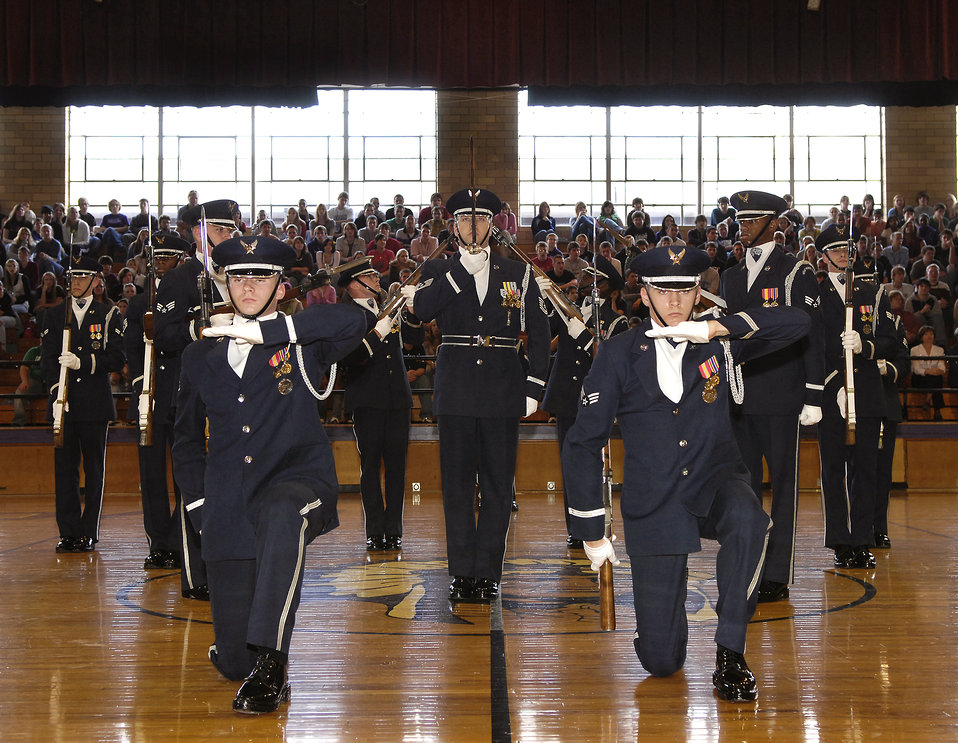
Drills for students

The U.S. Air Force Honor Guard Drill Team performed for students Dec. 12 at Mascoutah High School in Mascoutah, Ill. The Drill Team travels stateside and abroad performing drills for public and military audiences to recruit and inspire current and future Airmen.